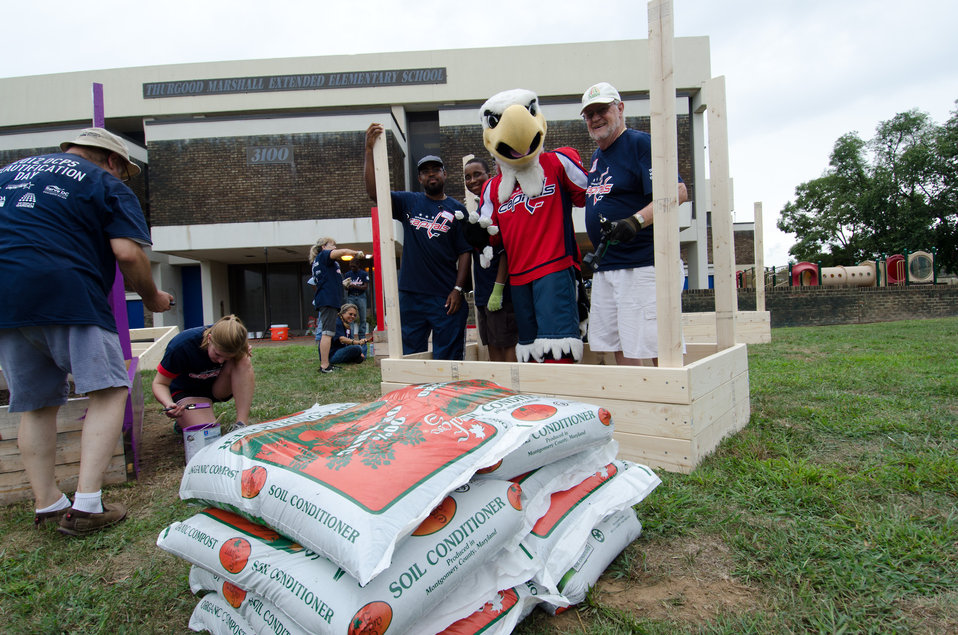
Washington Capitals' hockey mascot Slapshot is seen perched in a planter box that he took for a penalty box and brought in some volunteer offenders, Charles, Carlos and Ron, for a flock photo, when U.S. Department of Agriculture (USDA) People’s Garden Executive Master Gardeners, friends, and family, along with Washington Capitals fans volunteer in District of Columbia Public Schools’ (DCPS) Beautification Day, on Saturday, August 25, 2012, at Thurgood Marshall Elementary School, in Washington, D.C. Each year people are invited to help “spruce up” public school facilities in preparation for the first day of school. More the 70 volunteers pitched in at this large school facility. The People’s Garden effort involves building and painting raised planter boxes, then preparing the soil mixture so they are “ready to grow.” Additionally, a team that includes descendants of U.S. Supreme Court Justice Thurgood Marshall assembles a prefabricated garden toolshed. The Justice’s son, John Marshall leads the team, which includes Brianna the Justice’s great-grand daughter in one of many multi-generational efforts at this school today. Washington Capitals Forward Mike Riberio, his family and mascot Slapshot participated in every project underway at Marshall School. From the outside gardens, to inside murals, and robotics worktable construction, the teams made their goals.